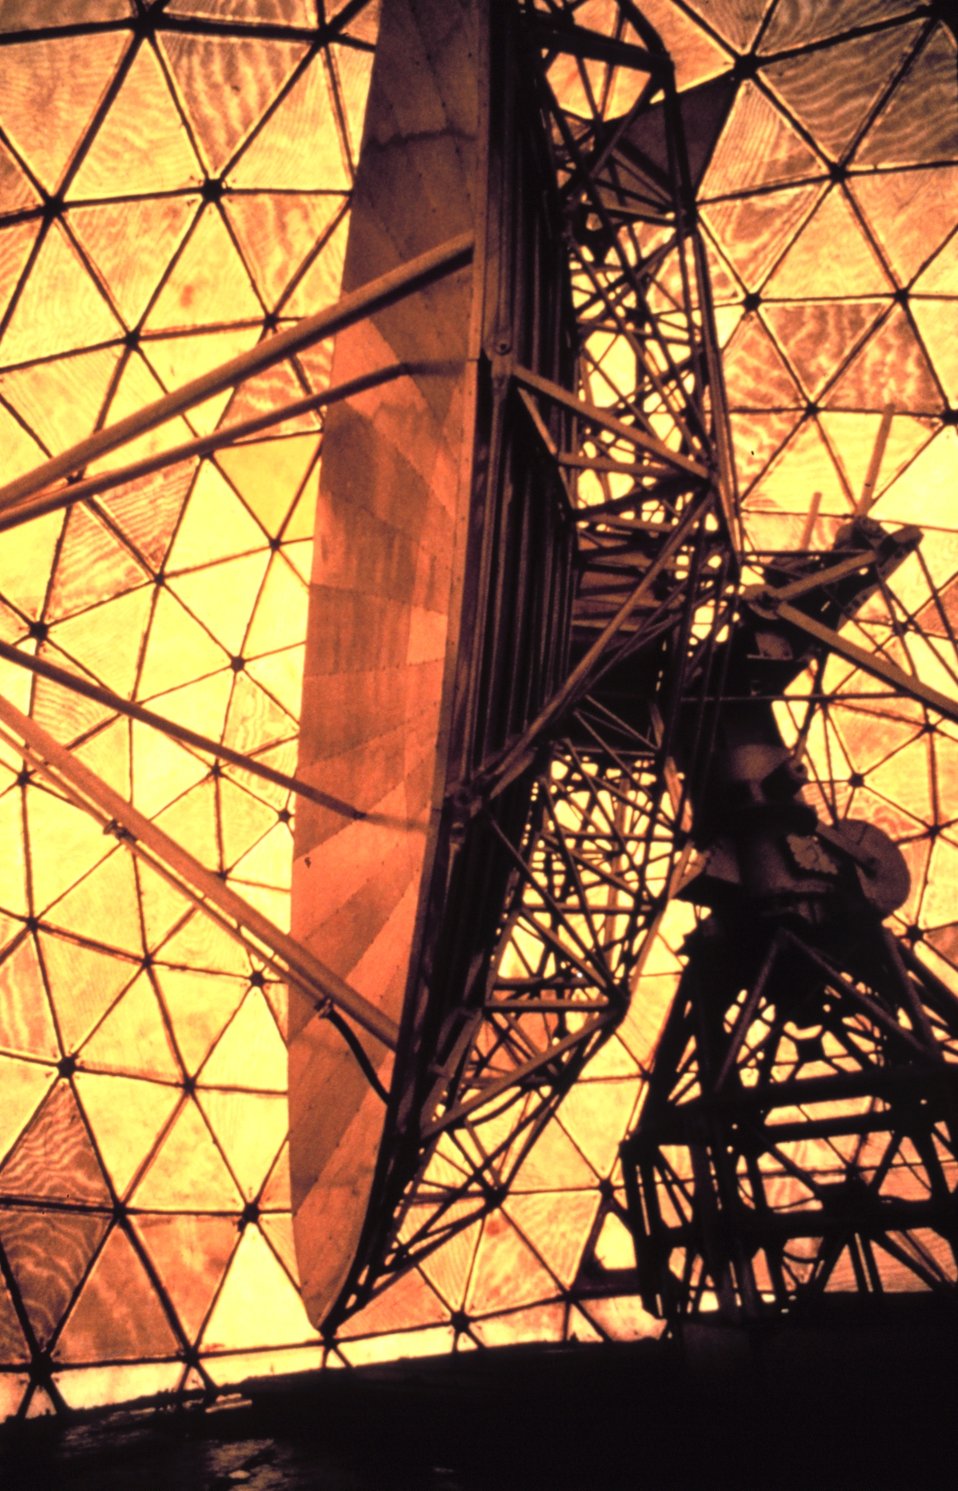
NSSL's first research Doppler Weather Radar. Radar dish in the foreground. Triangular panels of protective fiberglass radar dome in the background.